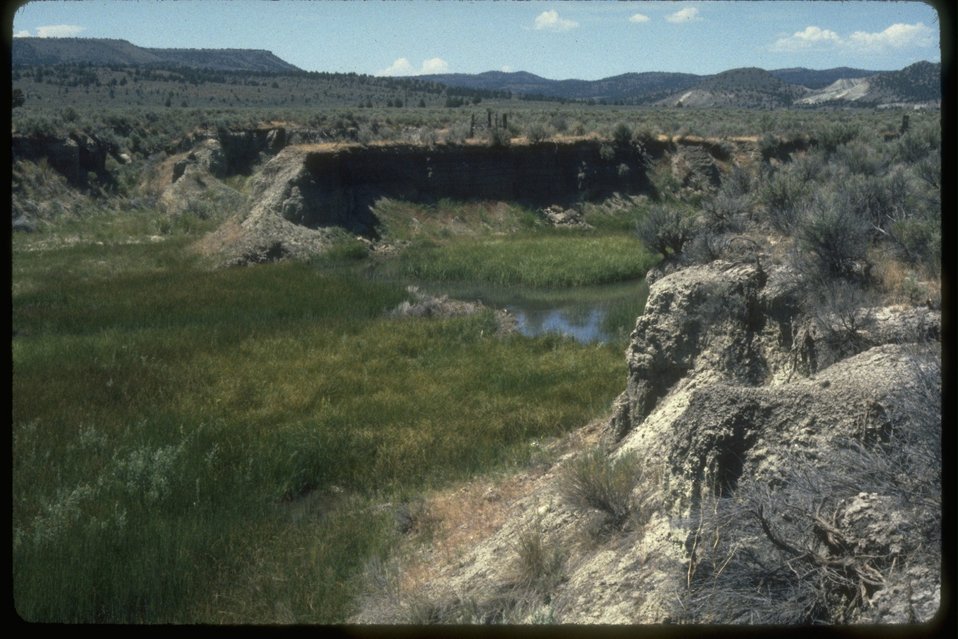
Riparian recovery at Camp Creek.